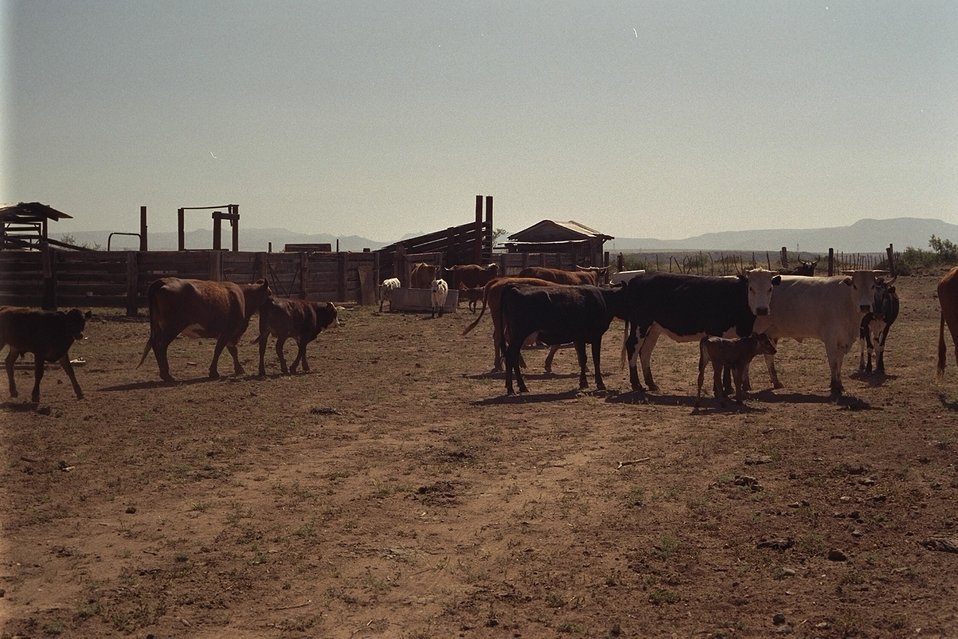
Moo!! Cattle on the Agua Fria National Monument.